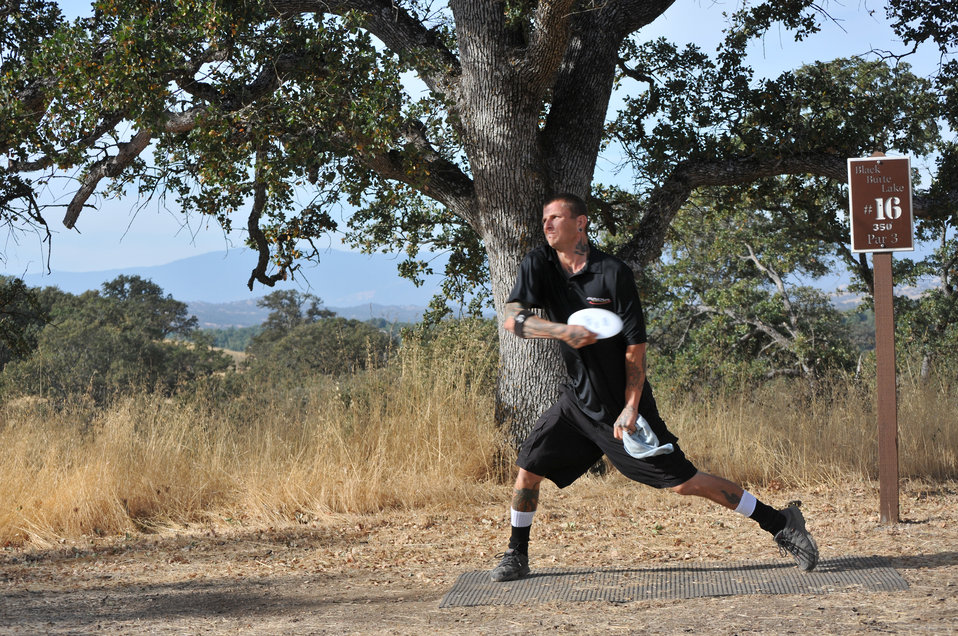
BLACK BUTTE LAKE, Calif. (Oct. 18, 2010) -- A disc golfer tees off during the Professional Disc Golf Association's Norcal Series Championships here Oct. 16. The U.S. Army Corps of Engineers Sacramento District’s Black Butte hosted the tournament Oct. 15-17 at its new disc golf course, built on park lands by The Orland Aces disc golf club under a partnership with the Corps. More than 150 disc golfers from as far as Texas competed in the tournament.